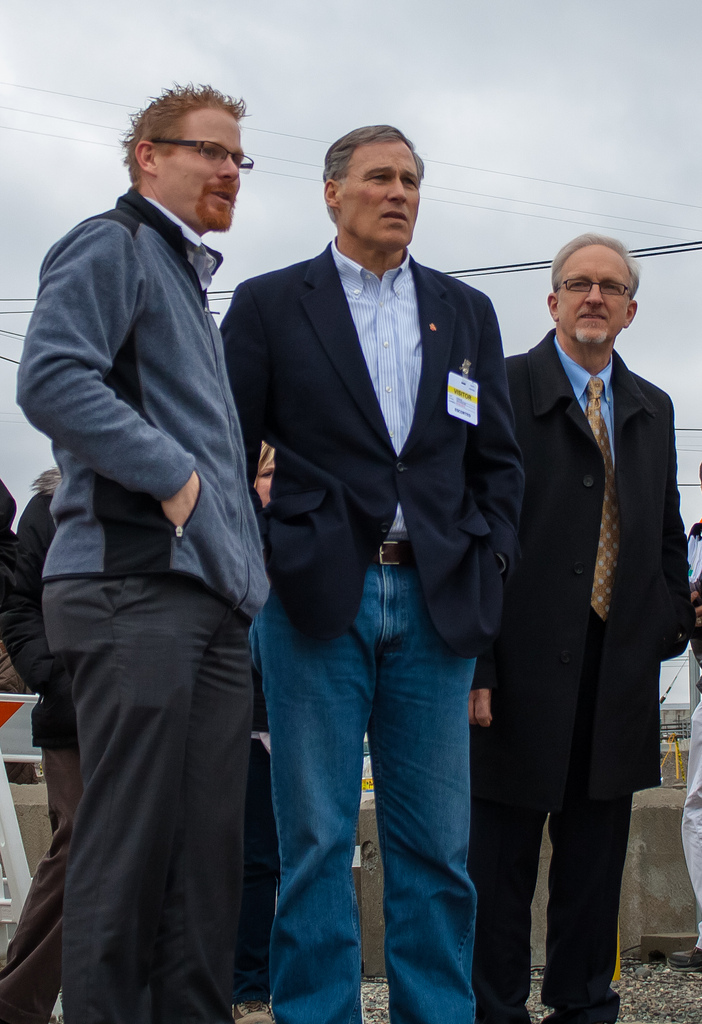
Inslee Visit at Hanford

Washington State Governor Jay Inslee, accompanied by Senior Advisor for Environmental Management Dave Huizenga, visits Hanford Tank Farms and Waste Treatment Plant